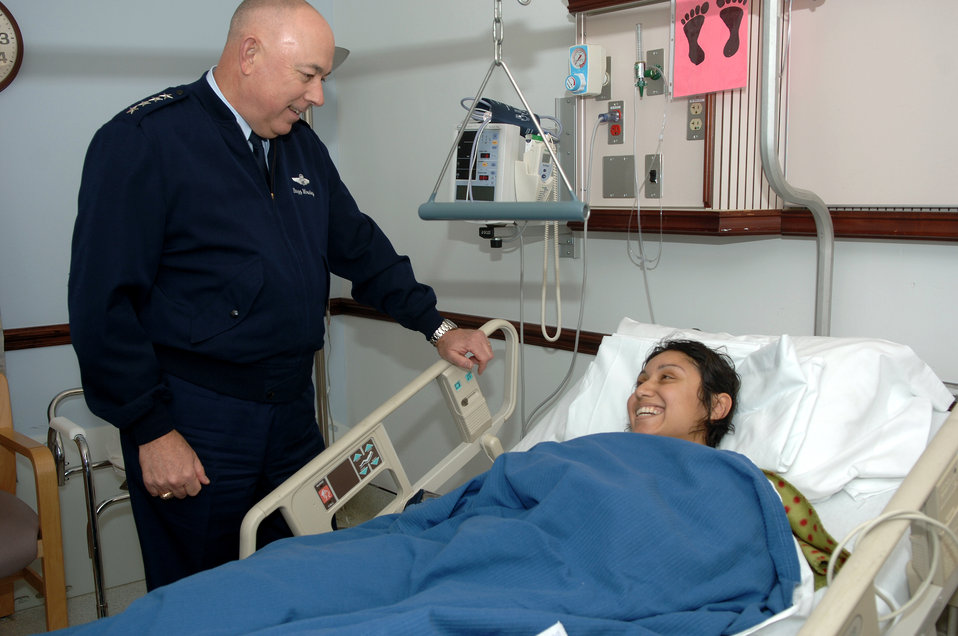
CSAF visits hero at Malcom Grow

Air Force Chief of Staff T. Michael Moseley visits with Staff Sgt. Aime Gaona Dec. 27 at Malcolm Grow Medical Center on Andrews Air Force Base, Md. Sergeant Gaona was wounded while deployed to Iraq from Luke AFB, Ariz. She arrived at Malcolm Grow Dec. 22 after being shot in the right thigh by a sniper just four days earlier.